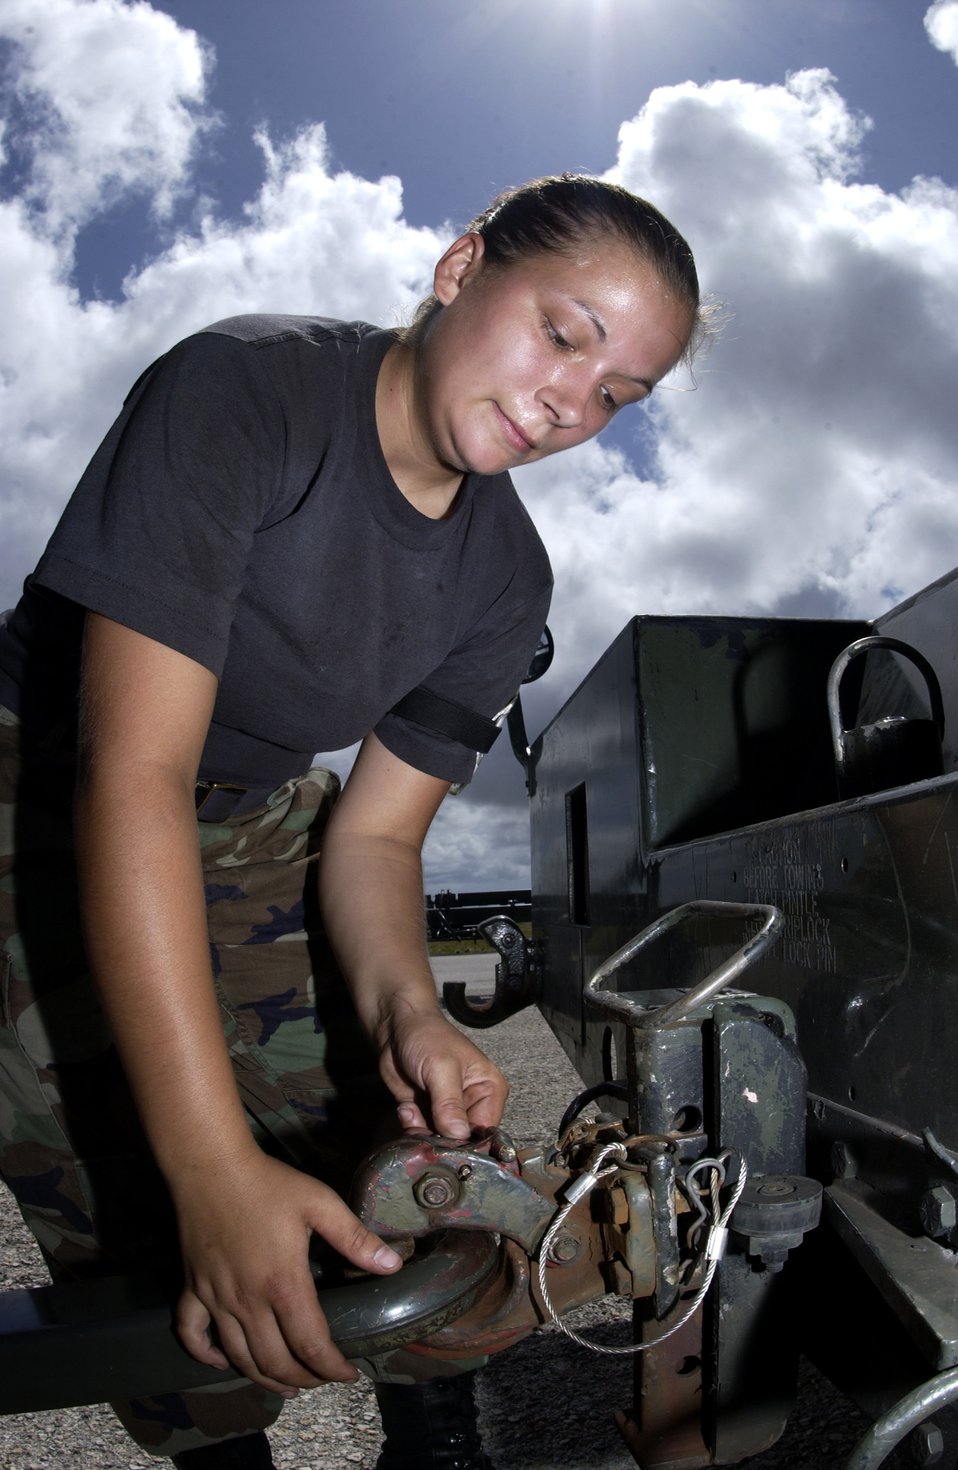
Presence in the Pacific

Airman 1st Class Courtney Schuman secures equipment to her truck to tow on the flightline Monday, April 17, 2006, at Andersen Air Force Base, Guam. She is assigned to the 36th Expeditionary Maintenance Squadron.